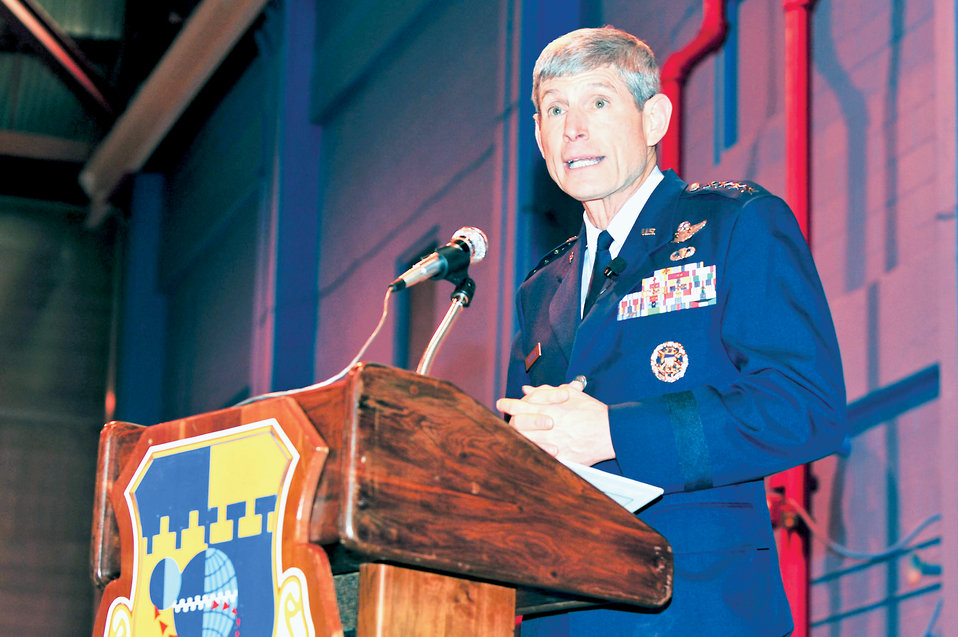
CSAF honors fallen Airmen in moving ceremony

Air Force Chief of Staff Gen. Norton Schwartz provides remarks Oct. 23, 2009, at Cape Canaveral Air Force Station, Fla., during a ceremony honoring 13 Airmen killed in a plane crash May 17, 1962. while supporting NASA's Mercury mission.